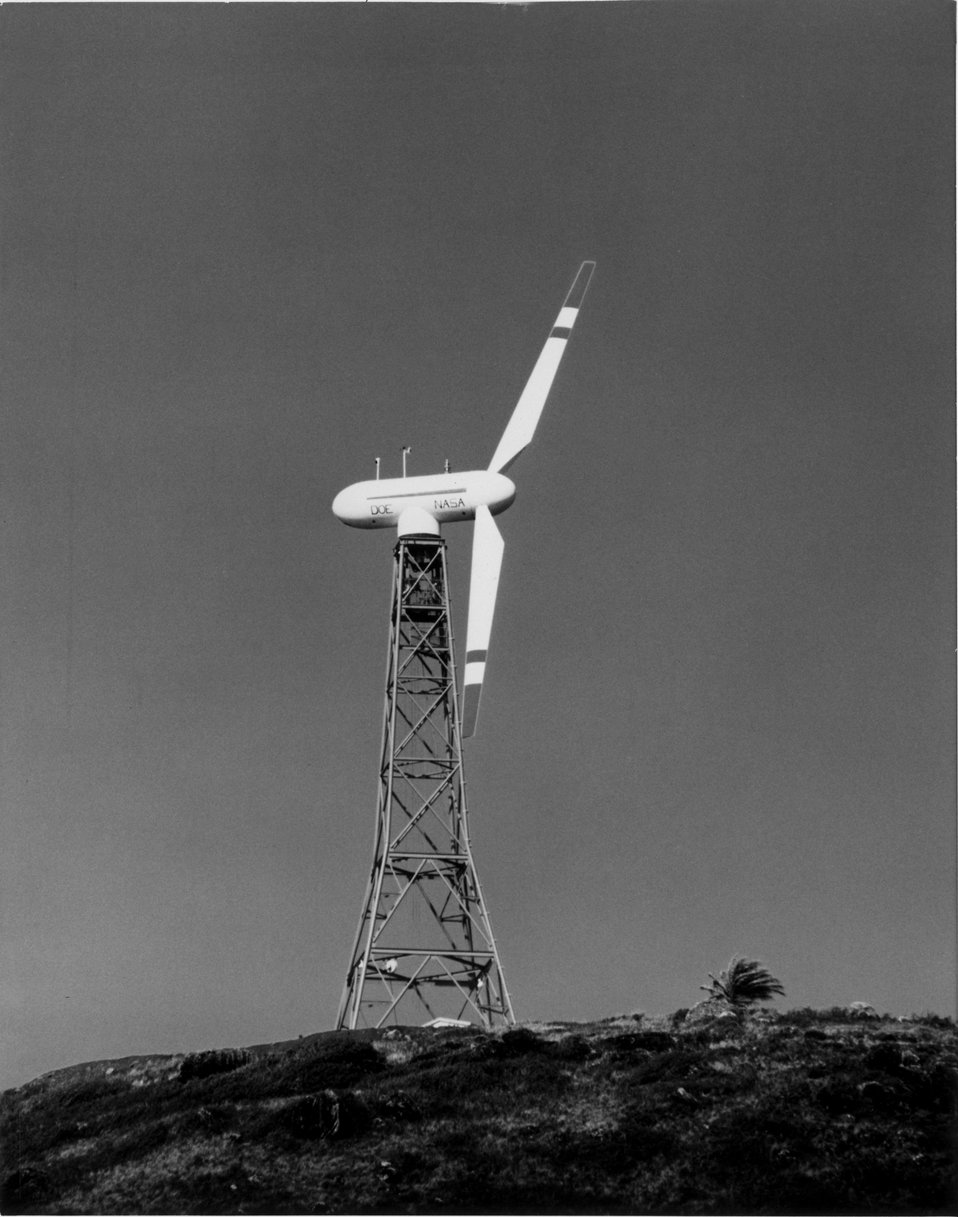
The ocean breezes off the north shore of Oahu, Hawaii, known for producing giant waves for the world's best surfing, now will be captured and converted into electricity. c. 1980